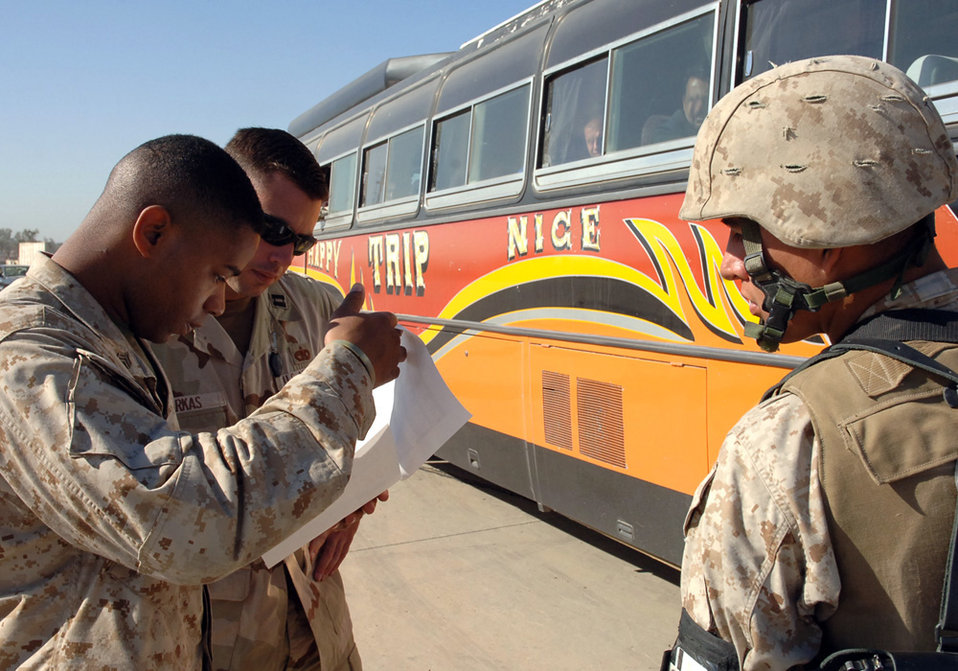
Iraqi poll workers

BAGHDAD, Iraq (AFPN) -- Marine Staff Sgt. Shawn Baker (left) reviews a boarding roster with Capt. Robert Farkas as another Marine looks on during the Iraqi elections. Sergeant Baker is assigned to the II Marine Expeditionary Force, and Captain Farkas is assigned to the 447th Expeditionary Logistics Readiness Squadron.